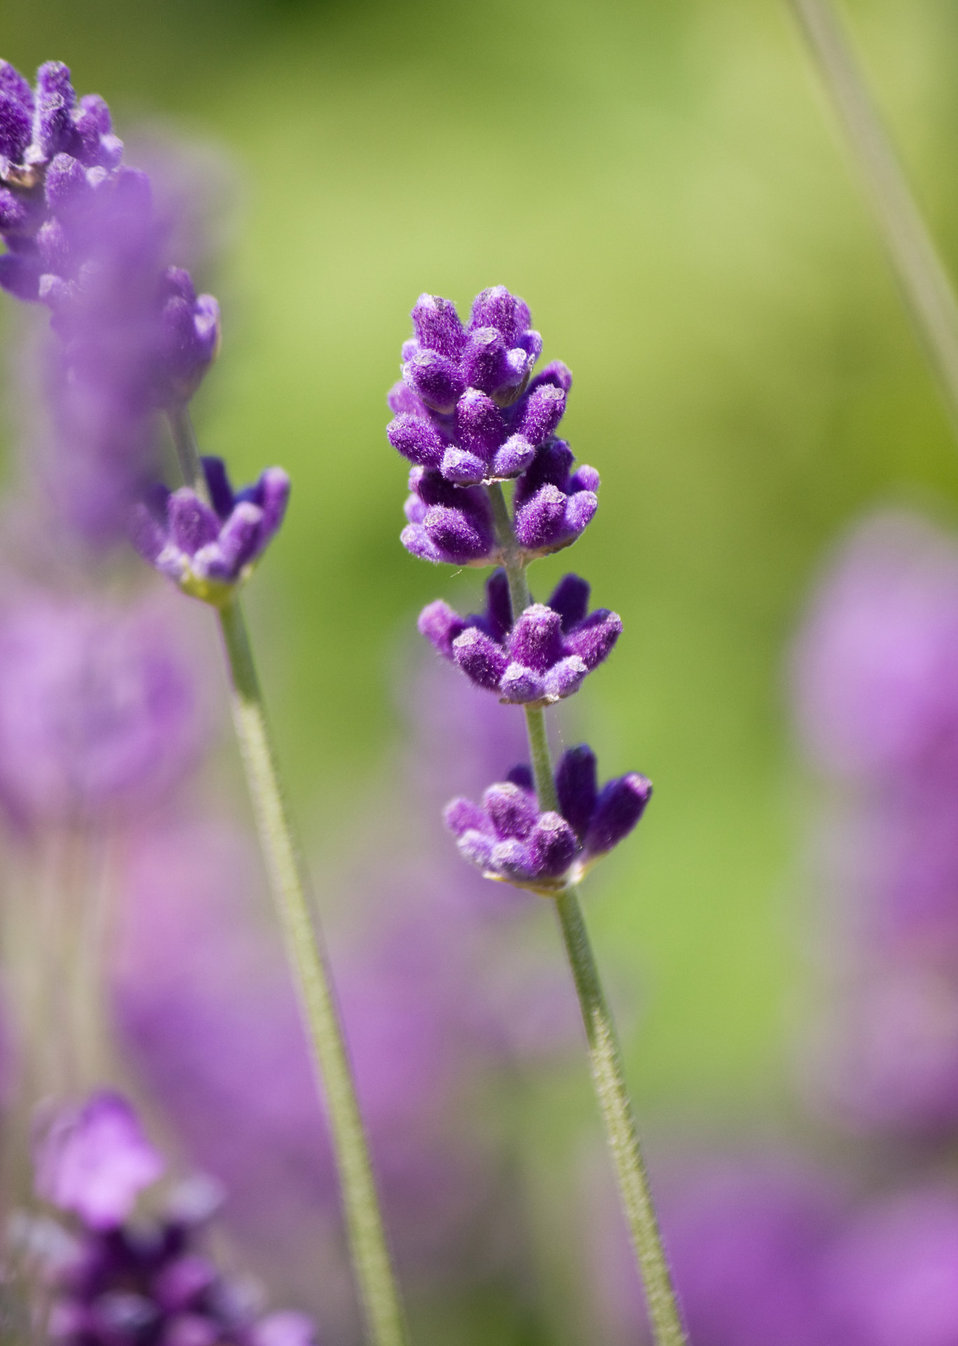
Lavender flower close-up

Close-up of a beautiful lavender flower.